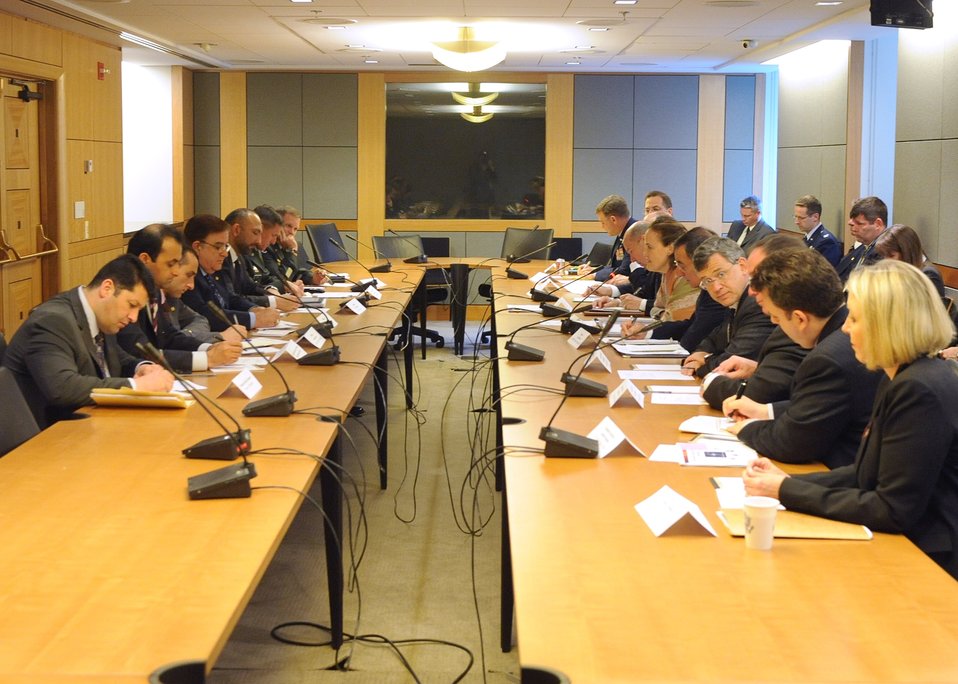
Security Working Group Session of the U.S.-Afghanistan Strategic Partnership Dialogue

U.S. Under Secretary for Defense Policy Flournoy, Afghan Defense Minister Wardak, and Afghan Interior Minister Atmar meet during the Security Working Group Session of the U.S.-Afghanistan Strategic Partnership Dialogue at the U.S. Department of State, Washington, D.C., May 11, 2010.